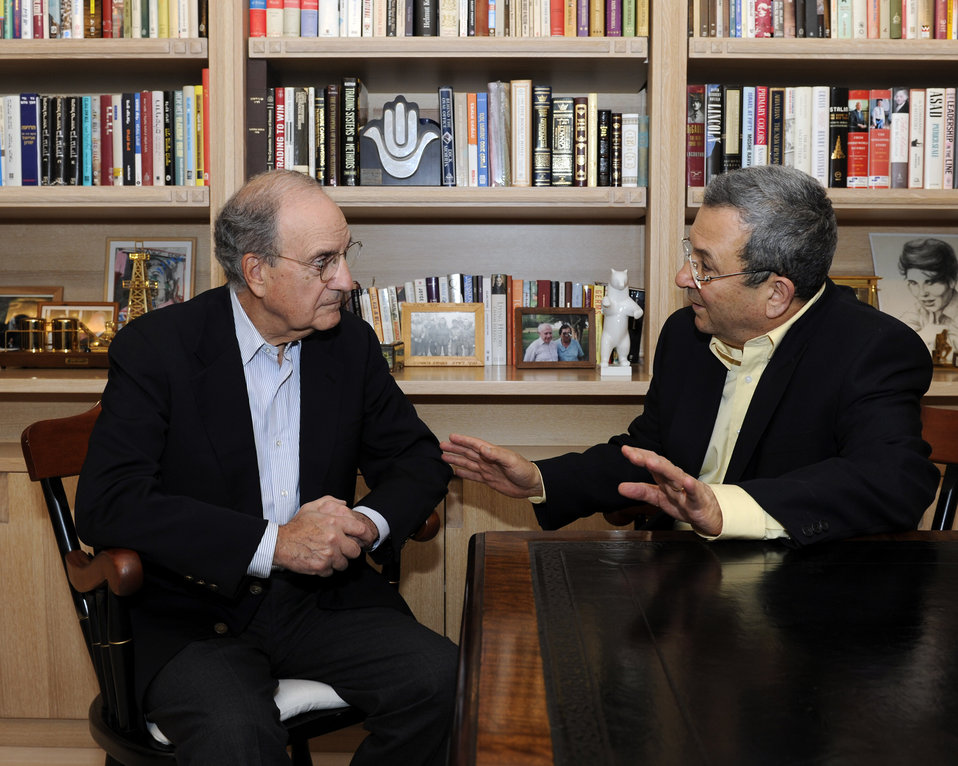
Special Envoy Mitchell Meets With Israeli Defense Minister Barak

U.S. Special Envoy for Peace in the Middle East George J. Mitchell meets with Israeli Defense Minister Ehud Barak at Defense Minister Barak's residence in Tel Aviv, Israel, on September 28, 2010.